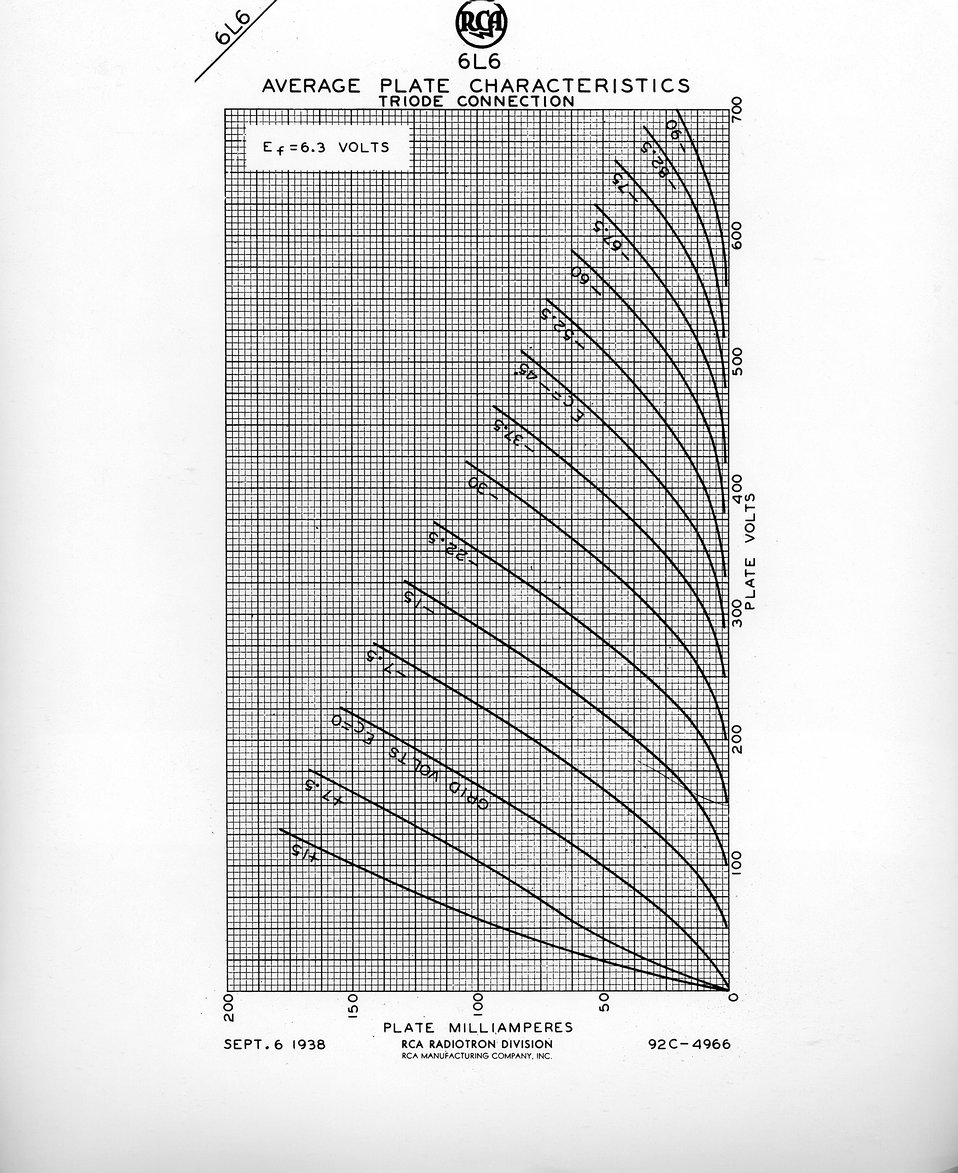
A picture of the plate characteristics of a trios connected 6L6 vacuum tube. c. 1949